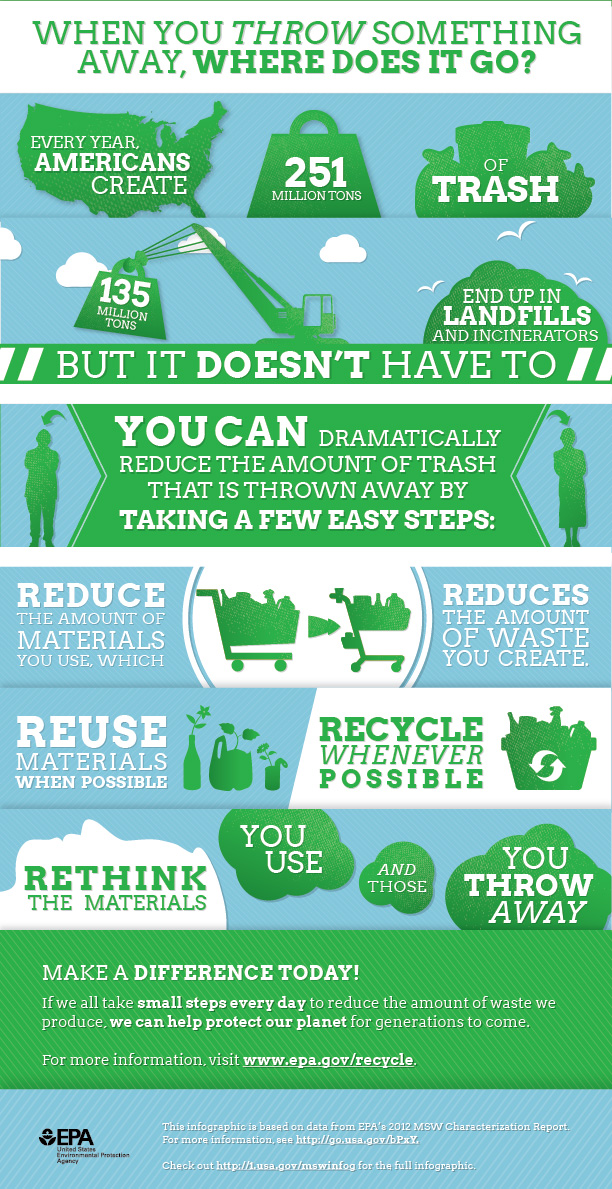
When you throw something away, where does it go?

What you throw away isn’t always trash. Think of it as stuff that can be reused and recycled.
- Full infographic: go.usa.gov/bPcA
- 2012 Municipal Solid Waste Characterization Fact Sheet: go.usa.gov/bPxY